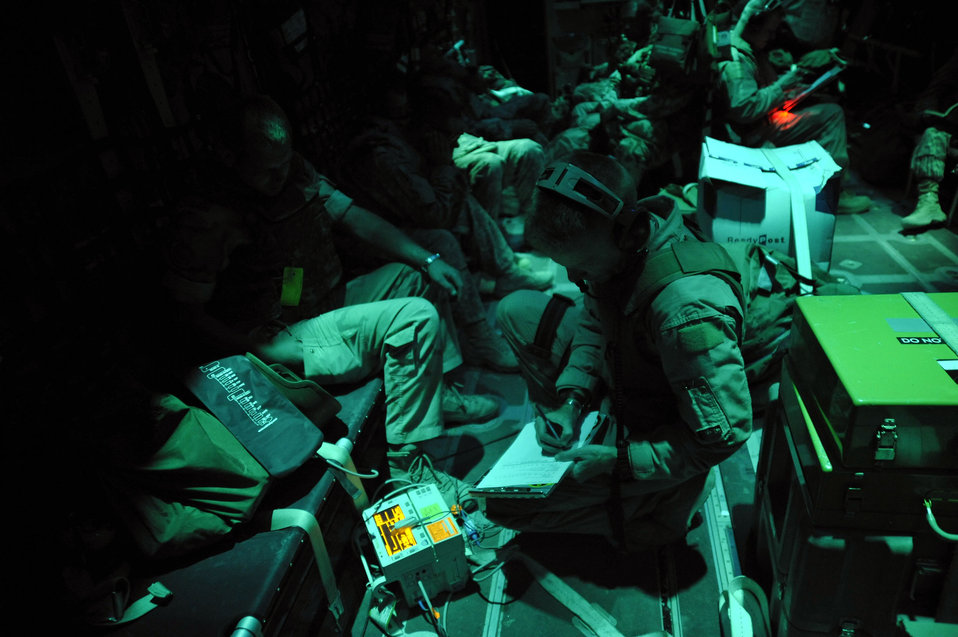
Kandahar Airmen fly missions of mercy

Master Sgt. Timothy Starkey works aboard an HC-130 Hercules during a mission Oct. 6, 2009. Sergeant Starkey is a medical technician assigned to the 451st Aeromedical Squadron at Kandahar Airfield, Afghanistan.